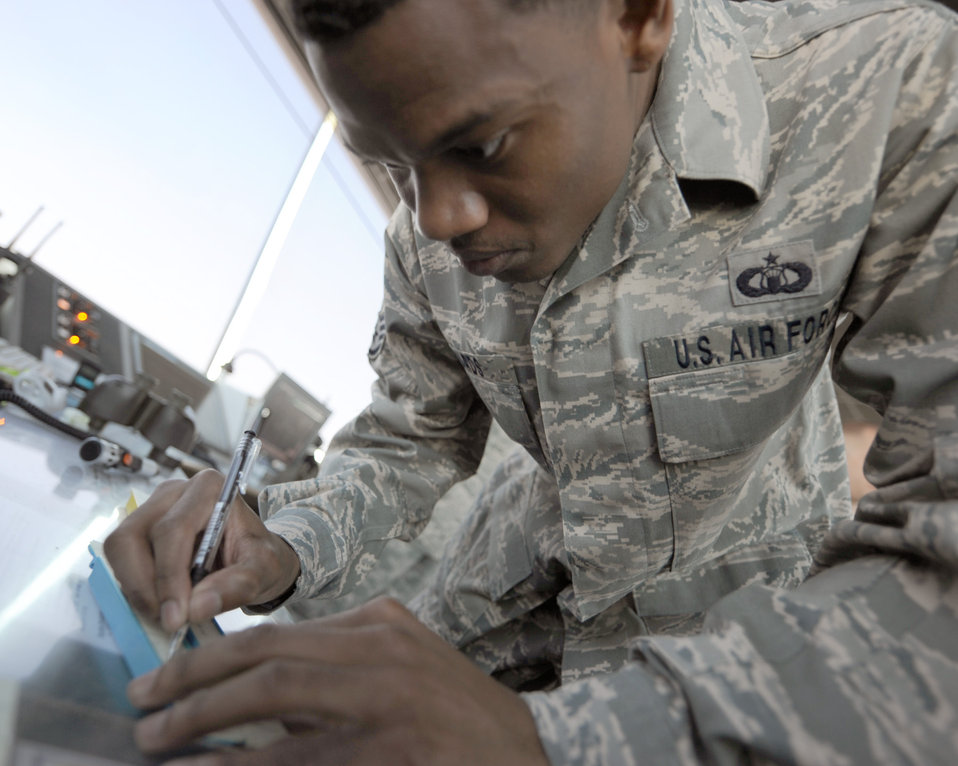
Air traffic controllers ensure safe flow of aircraft

Staff Sgt. Tyrone Edwards documents arrival and departure times on a flight progress strip Oct. 18, 2010, at an undisclosed location in Southwest Asia. Sergeant Edwards is a local controller with the 379th Expeditionary Operations Support Squadron and is deployed from Keesler AFB, Miss.